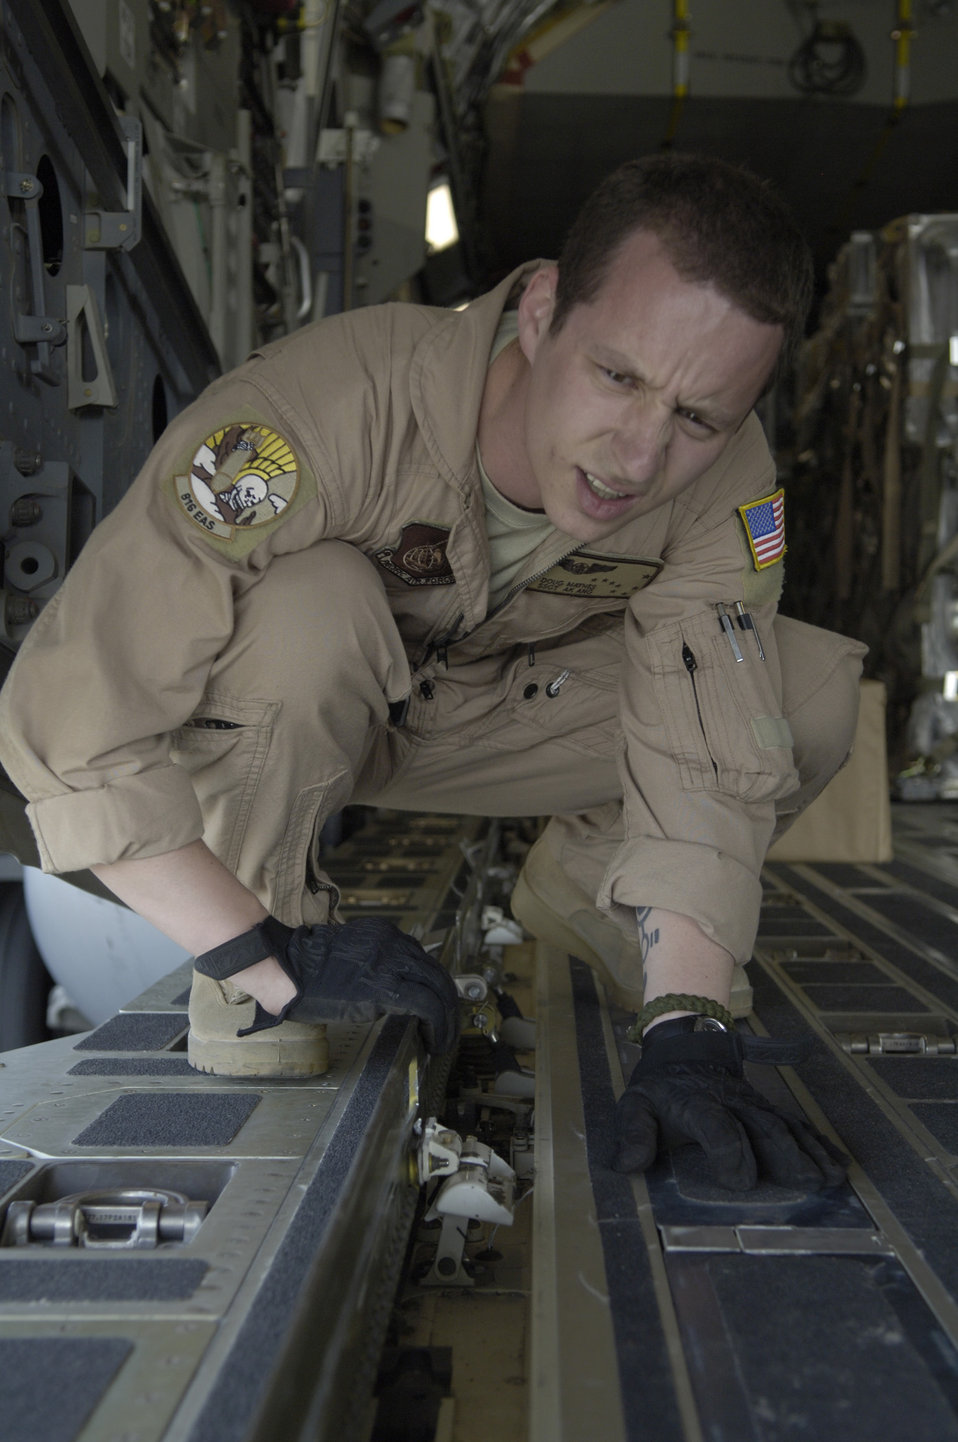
Loading a C-17

Staff Sgt. Dough Mathes inspects a rail inside the cargo bay of a C-17 Globemaster III June 13, 2011, at Bagram Airfield, Afghanistan. Sergeant Mathes is assigned to the 816th Expeditionary Airlift Squadron.